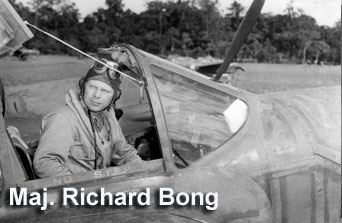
Maj. Richard Bong, the top scoring ace in World War II, survived more than 200 combat missions. He died in an aircraft crash testing the P-80 Shooting Star in 1945.